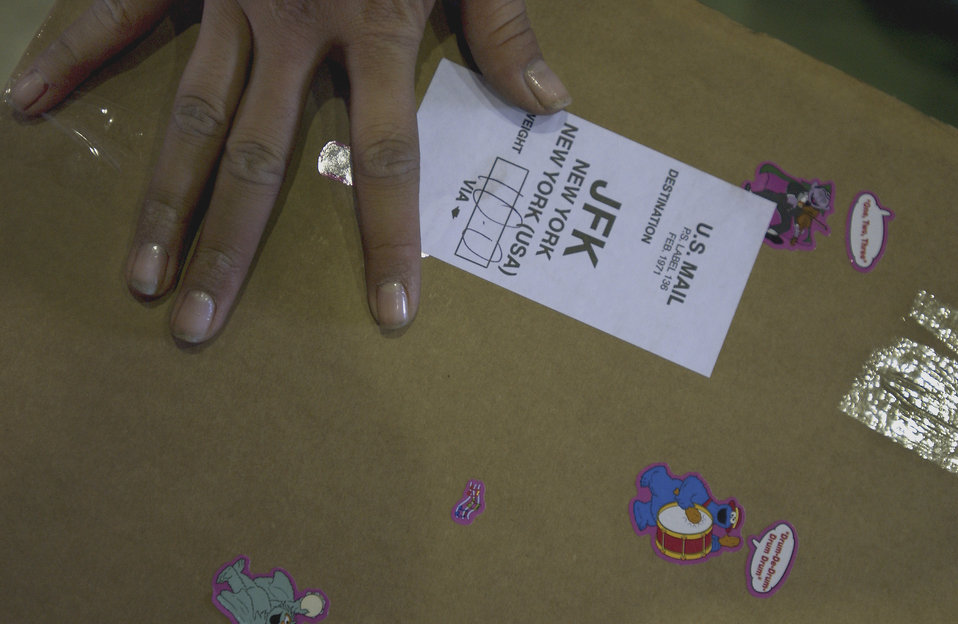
Postal handlers

BAGHDAD INTERNATIONAL AIRPORT, Iraq -- Some packages bound for the United States bear a little extra